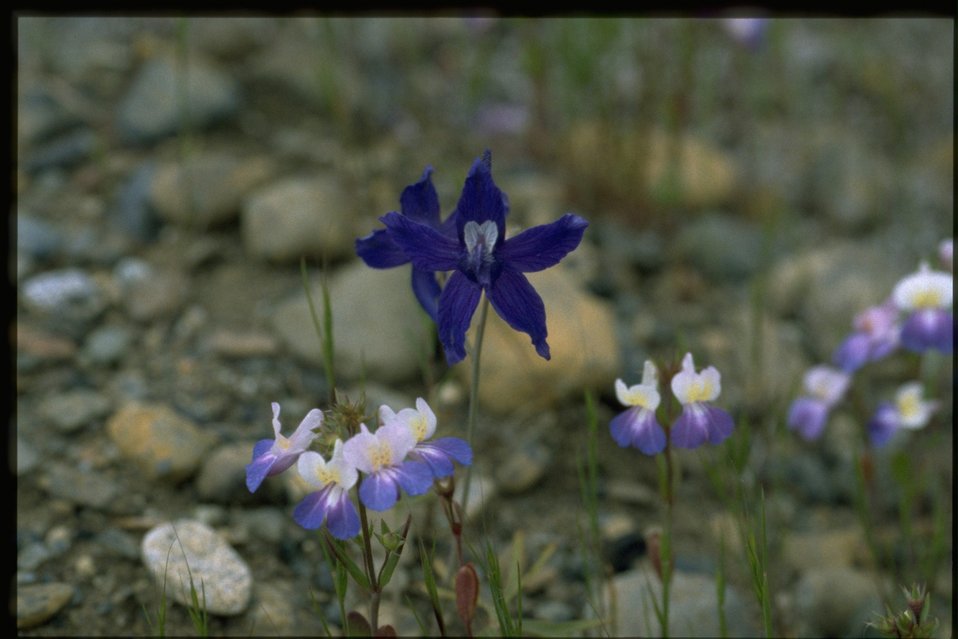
Medium shot of Delphinium wildflower.